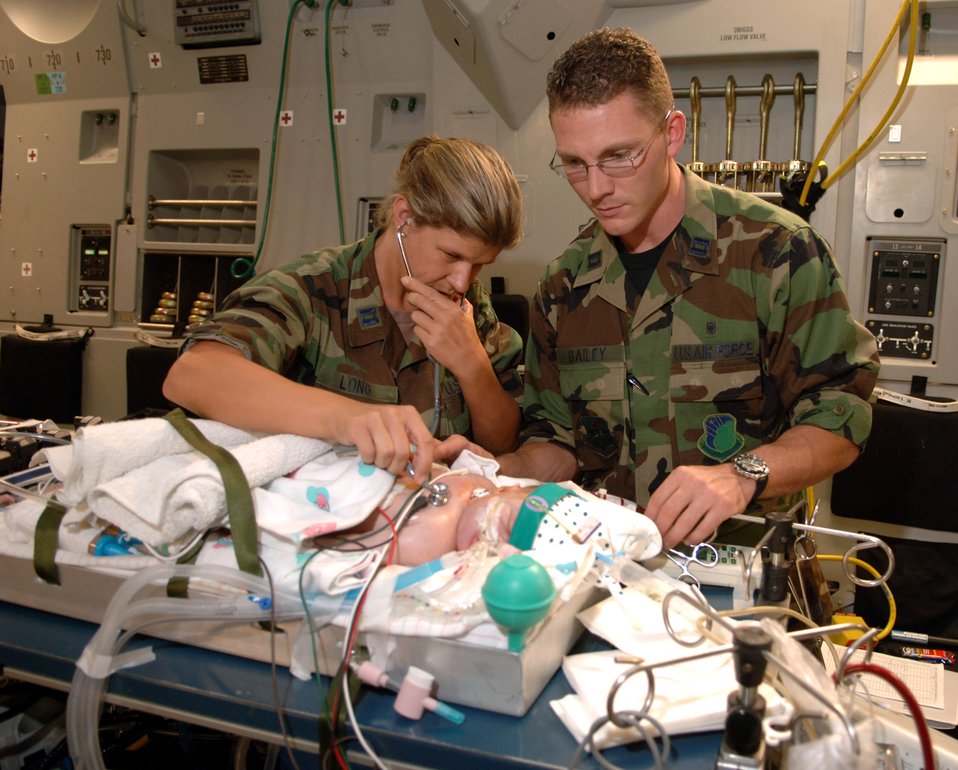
ECMO medical team transports newborn from Puerto Rico

Capts. Karen Long and James Bailey monitor the vital signs and blood flow of 3-day-old Stuart Parker aboard a C-17 Globemaster III on July 21. An Extracorporeal Membrane Oxygenation team comprised Air Force and Army medical specialists from the Wilford Hall Medical Center at Lackland Air Force Base, Texas, flew to San Juan, Puerto Rico, to transport Stuart to San Antonio for more advanced care. Captain Long is a neonatal intensive care nurse and Captain Bailey is a pediatric intensive care nurse assigned to the Wilford Hall Medical Center.